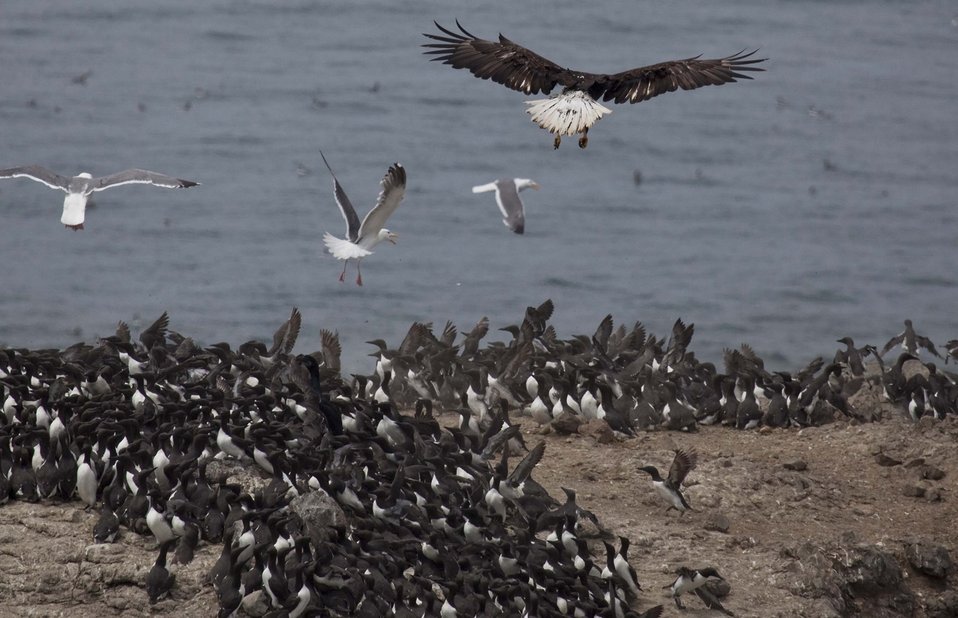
Look out, murre! Oregon Islands NWR

A bald eagle swoops in to pick off a common murre from Colony Rock in the Oregon Islands National Wildlife Refuge.